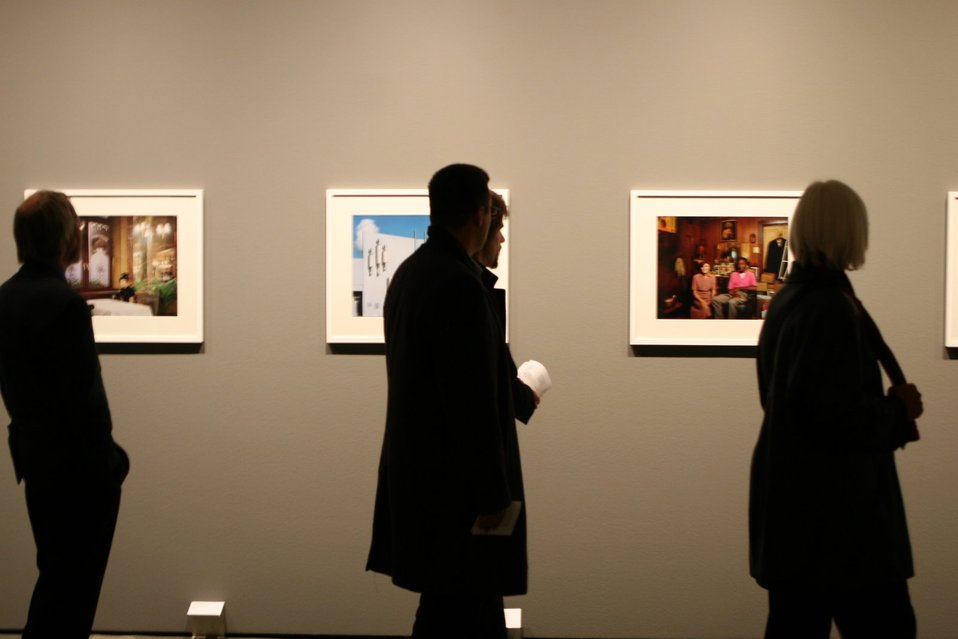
Viewers examine photography at the C/O Berlin Museum

Together with Robert Frank and Nan Goldin, photographer Ofer Wolberger presents “Life with Maggie” in a photo exhibition at the C/O Berlin Museum, in Berlin, Germany, on October 9, 2009.